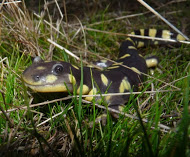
California Tiger Salamander

Scientific name: Ambystoma californiense
Status: Endangered/Threatened